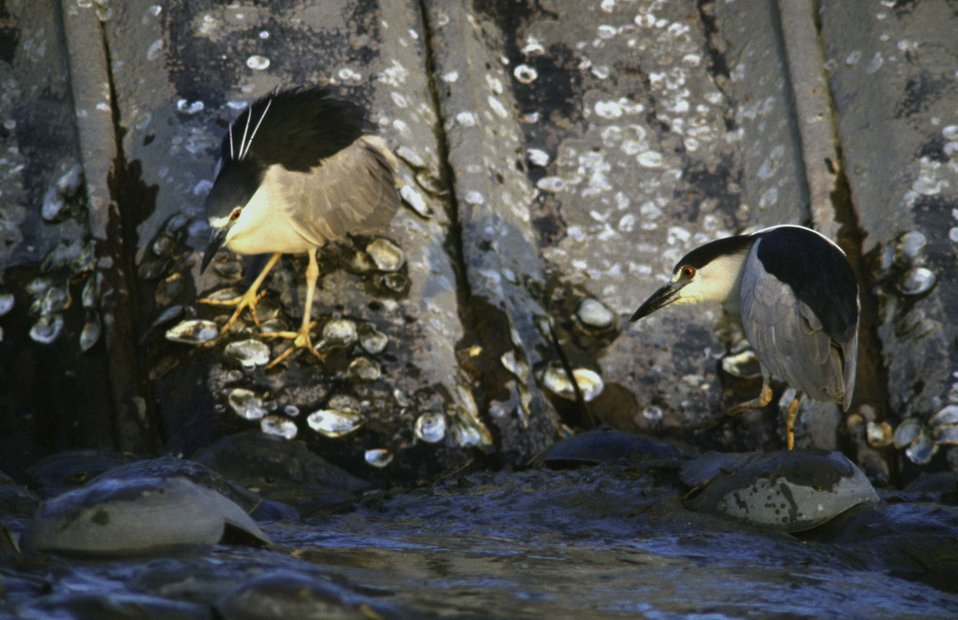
Black Crowned Night Herons

Pt. Mahon, DE.